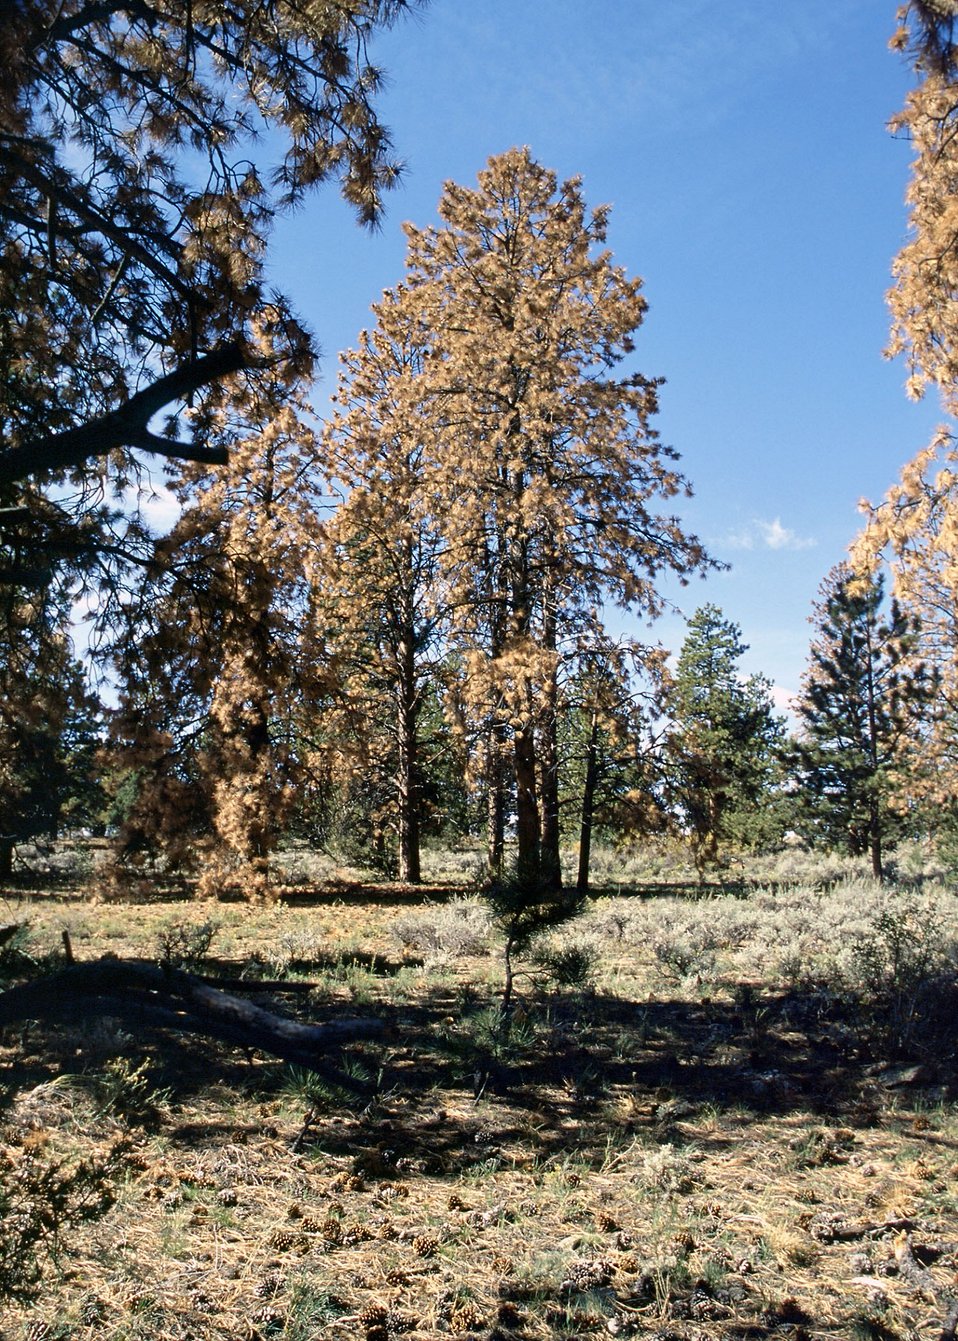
Beetles kill trees